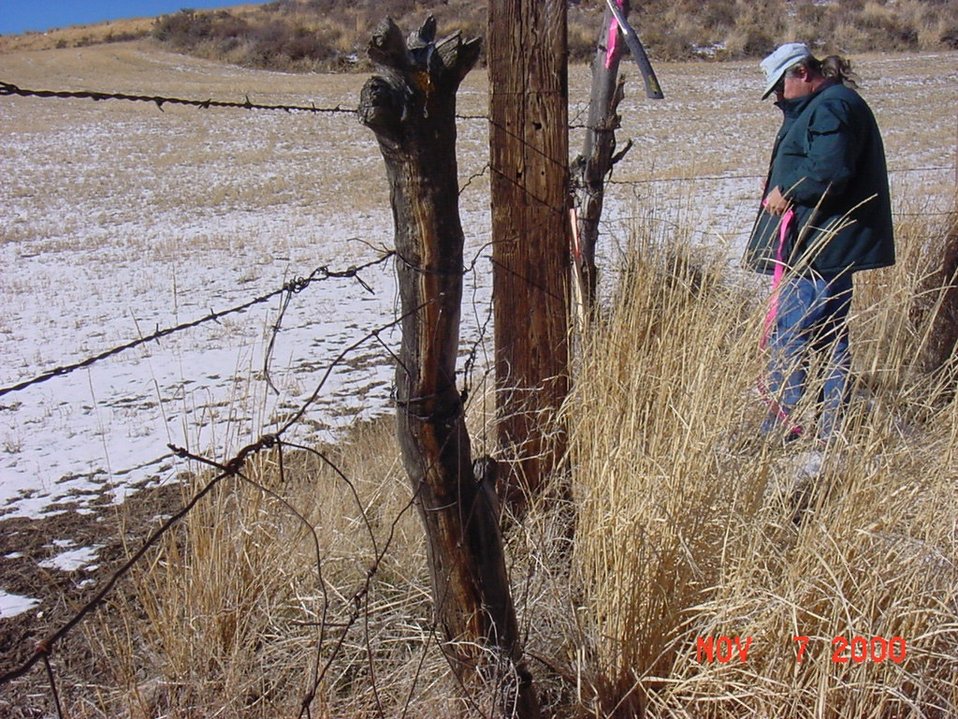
Cadastral Surveys Idaho Bureau of Land Management